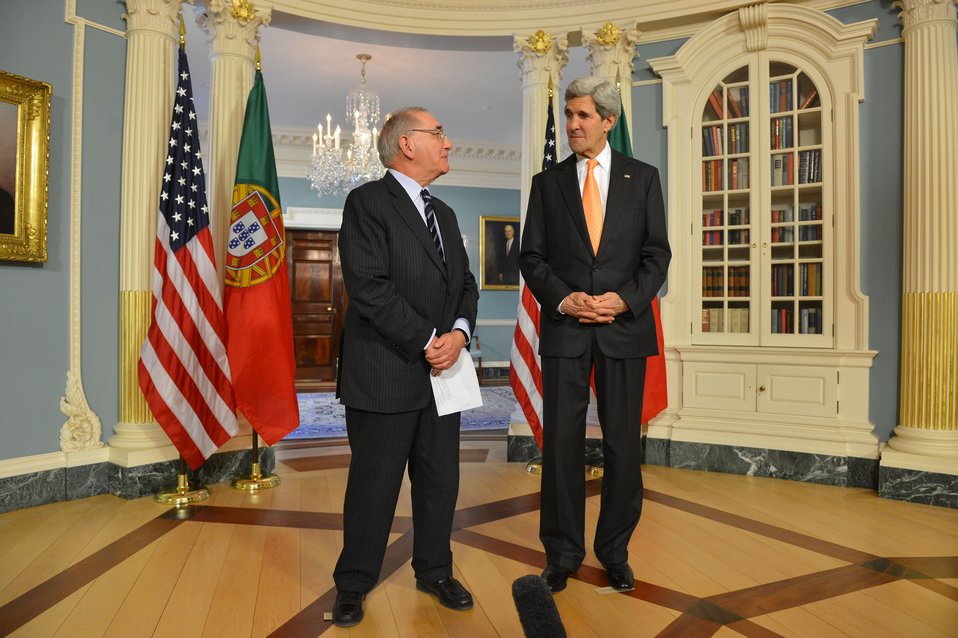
Secretary Kerry and Portuguese Foreign Minister Machete Address Reporters

U.S. Secretary of State John Kerry and Portuguese Foreign Minister Rui Machete address reporters before their bilateral meeting at the U.S. Department of State in Washington, D.C., on January 29, 2014.